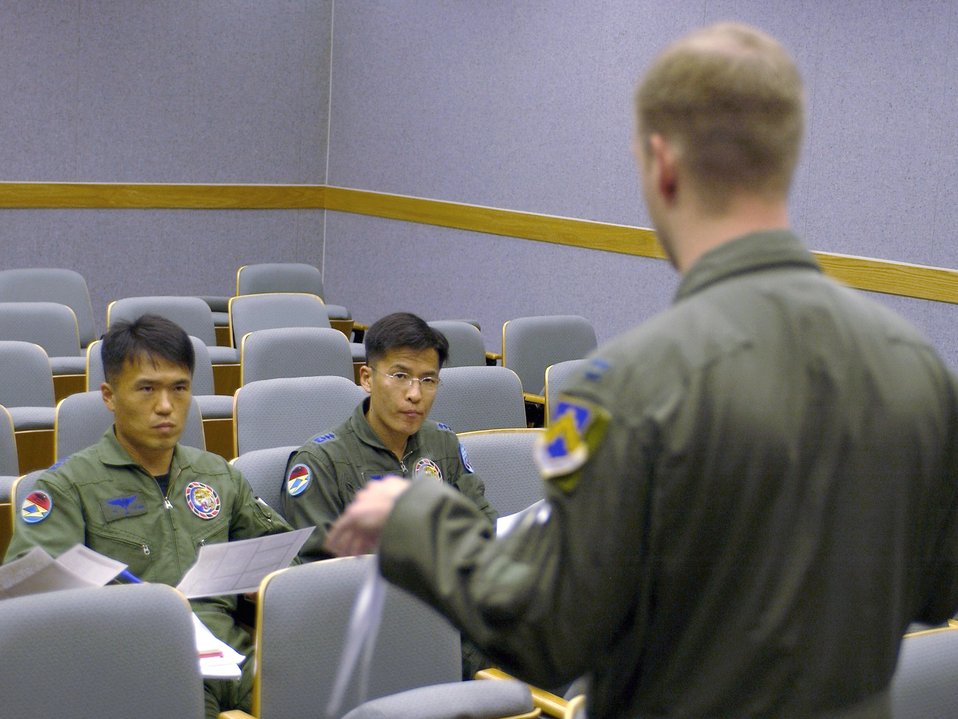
Kunsan, South Korea team up for joint training exercise

Capt. Luther Cross briefs South Korean air force pilots Capt. Jueng Geun Lee and Capt. Chang Soon Im June 8 for an exercise at Kunsan Air Base, South Korea. This is the first time since the South Korean 111th Fighter Squadron moved to Kunsan AB that the South Korean and American units have briefed, flown and debriefed together on a dedicated mission. Captain Cross is a 35th Fighter Wing pilot.